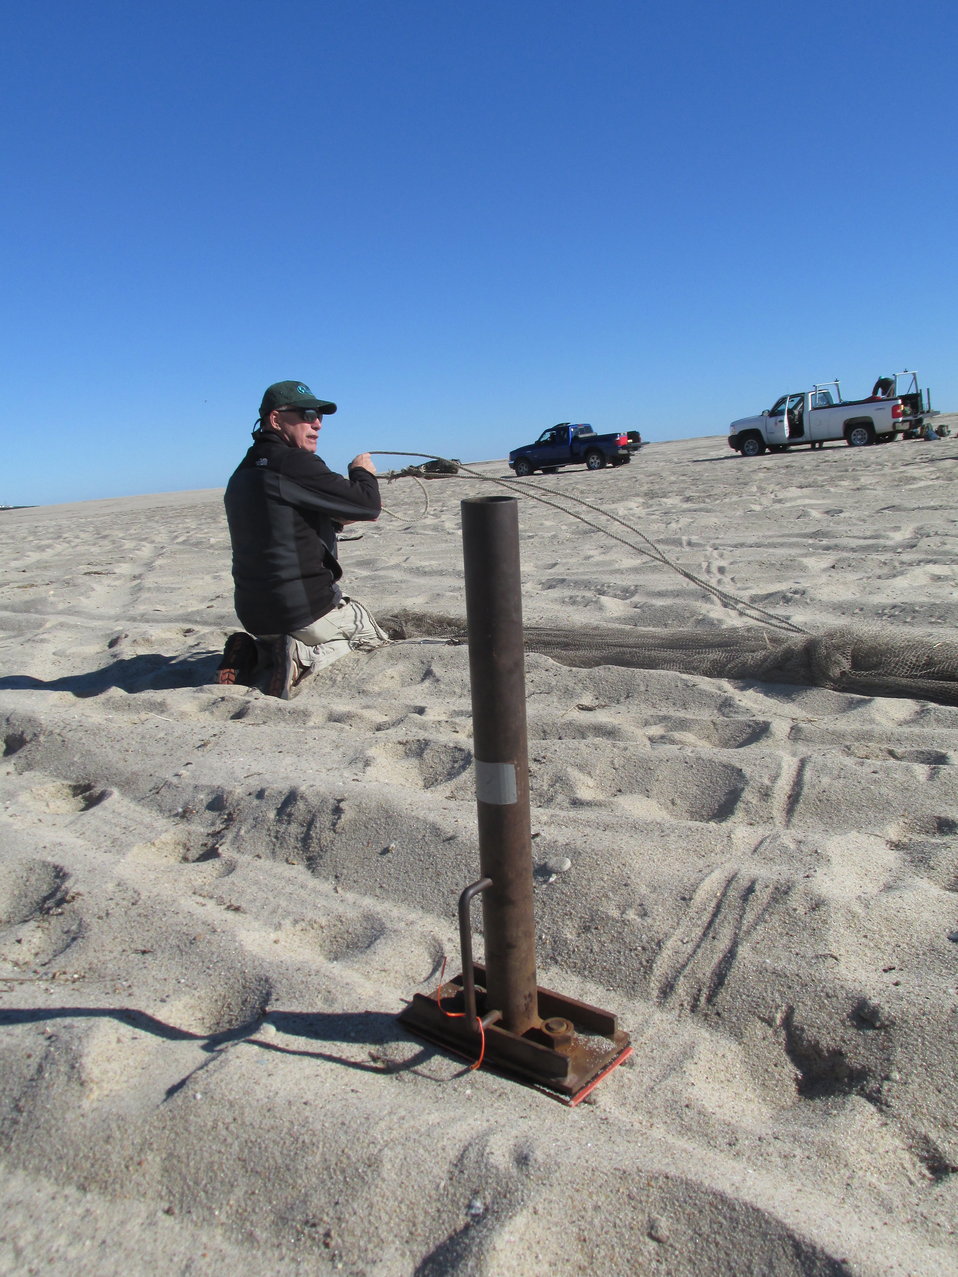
Red knot cannon netting in Cape Cod

Biologist Larry Niles behind the cannon.